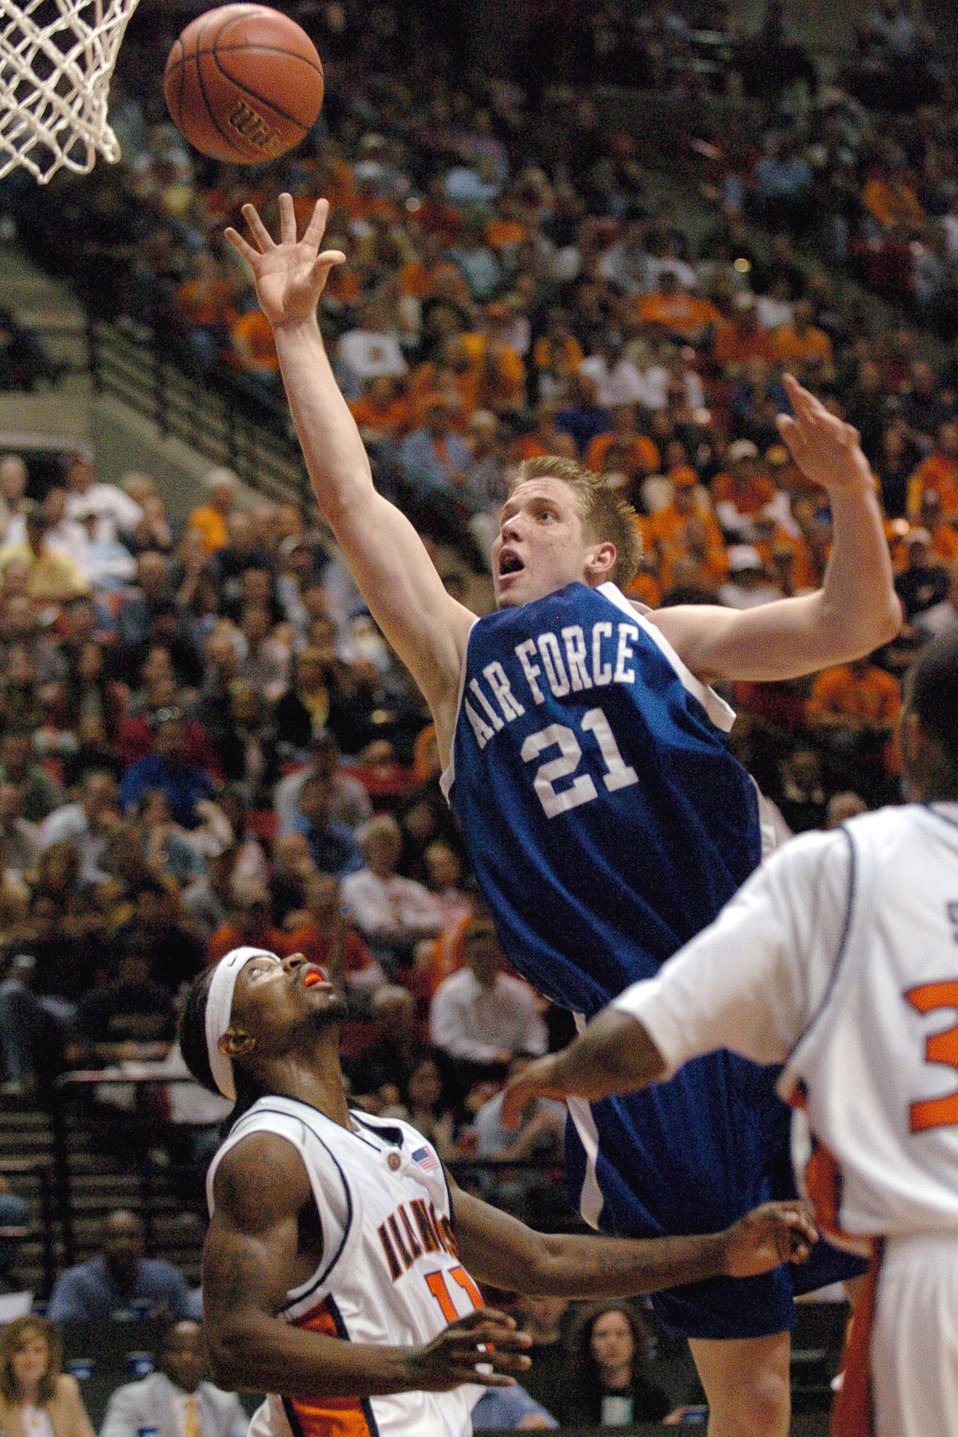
Illinois grounds Air Force

Falcon forward Jacob Burtschi flies to the basket above Illinois guard Dee Brown during the NCAA Tournament game Thursday, March 16, 2006, at Cox Arena in San Diego.